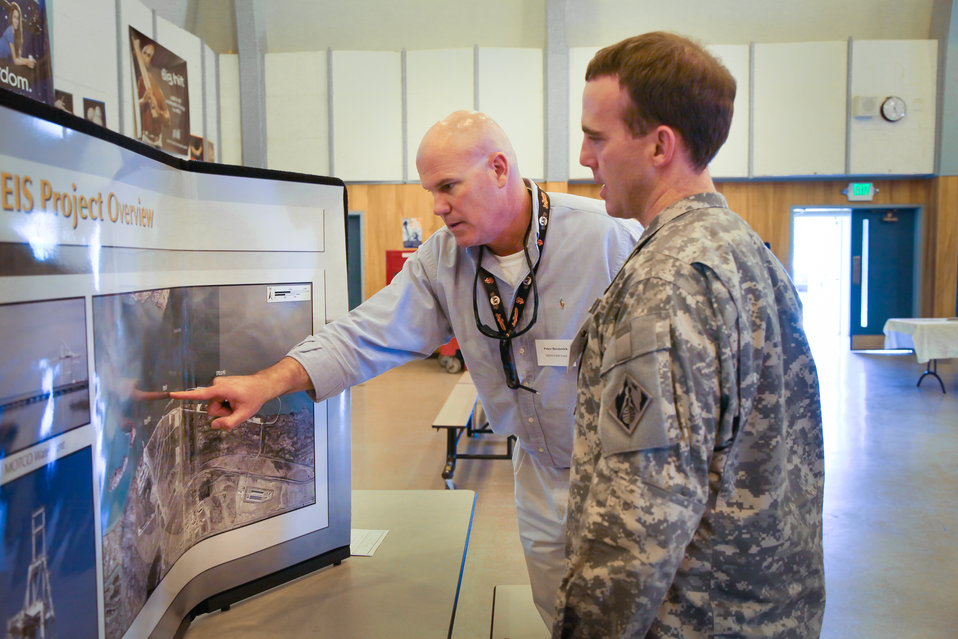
Public meeting for Military Ocean Terminal Concord

Pete Broderick (left), project manager with the U.S. Army Corps of Engineers Sacramento District, points out Pier 2 during a Military Ocean Terminal Concord public meeting April 25, 2013 in Concord, Calif. to Lt. Col. Braden LeMaster the district's deputy commander. Pier 2 has been inoperable for the past five years and is a key component for MOTCO, which represents nearly 25 percent of the nation’s total ammunition shipping capability. The Department of the Army and the U.S. Army Corps of Engineers Sacramento District have been developing three viable scenarios for Pier 2 and/or Pier 3 modernizations - all of which would allow MOTCO to meet its mission safely and efficiently. The district is gathering public input to determine the best approach to modernize the piers, and hopes to outline that plan in the final environmental impact statement expected fall 2014 with possible construction tentatively scheduled in 2016.